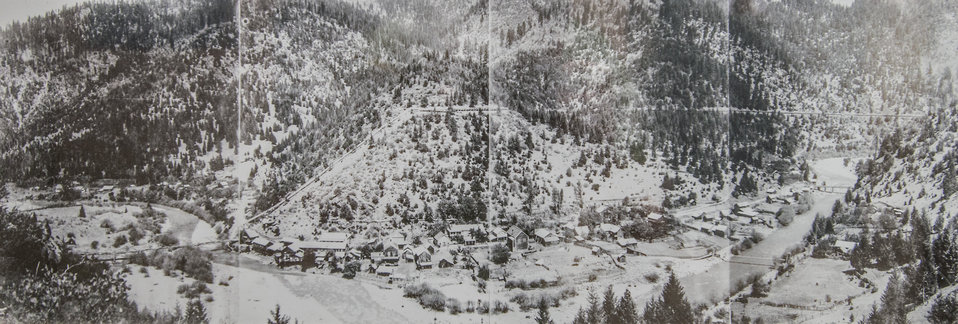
A panoramic photograph of Sawyers Bar in the late 1800's, on display at the Salmon/Scott Ranger Station, of the Klamath National Forest, Yreka, CA, on Wednesday, Aug. 6, 2013. this National Forest is the site of the Salmon River Complex Wildlands Fire, northwest of Sawyers Bar and west of Etna, CA.